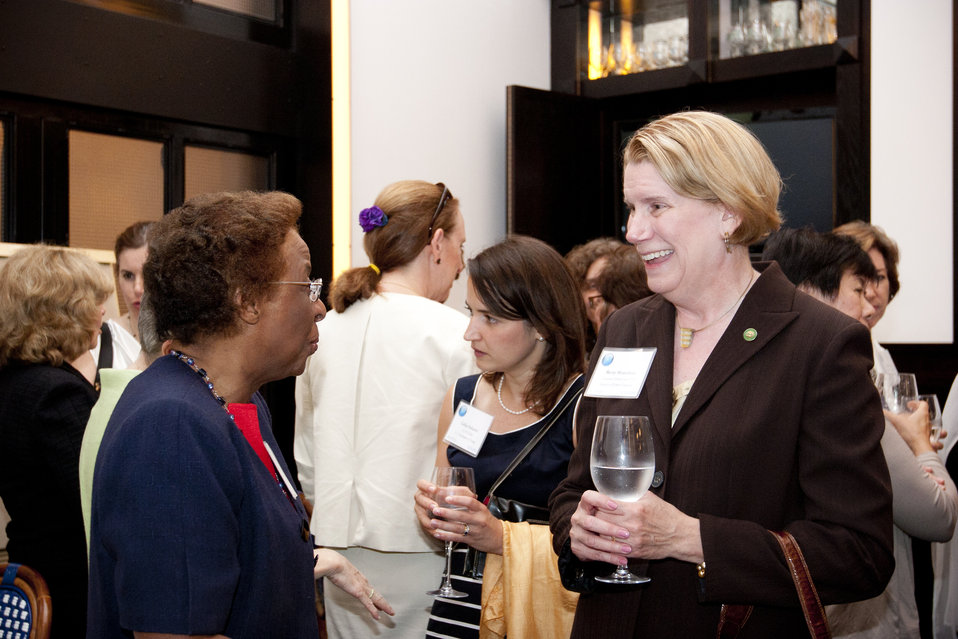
WomenandEnergy 19